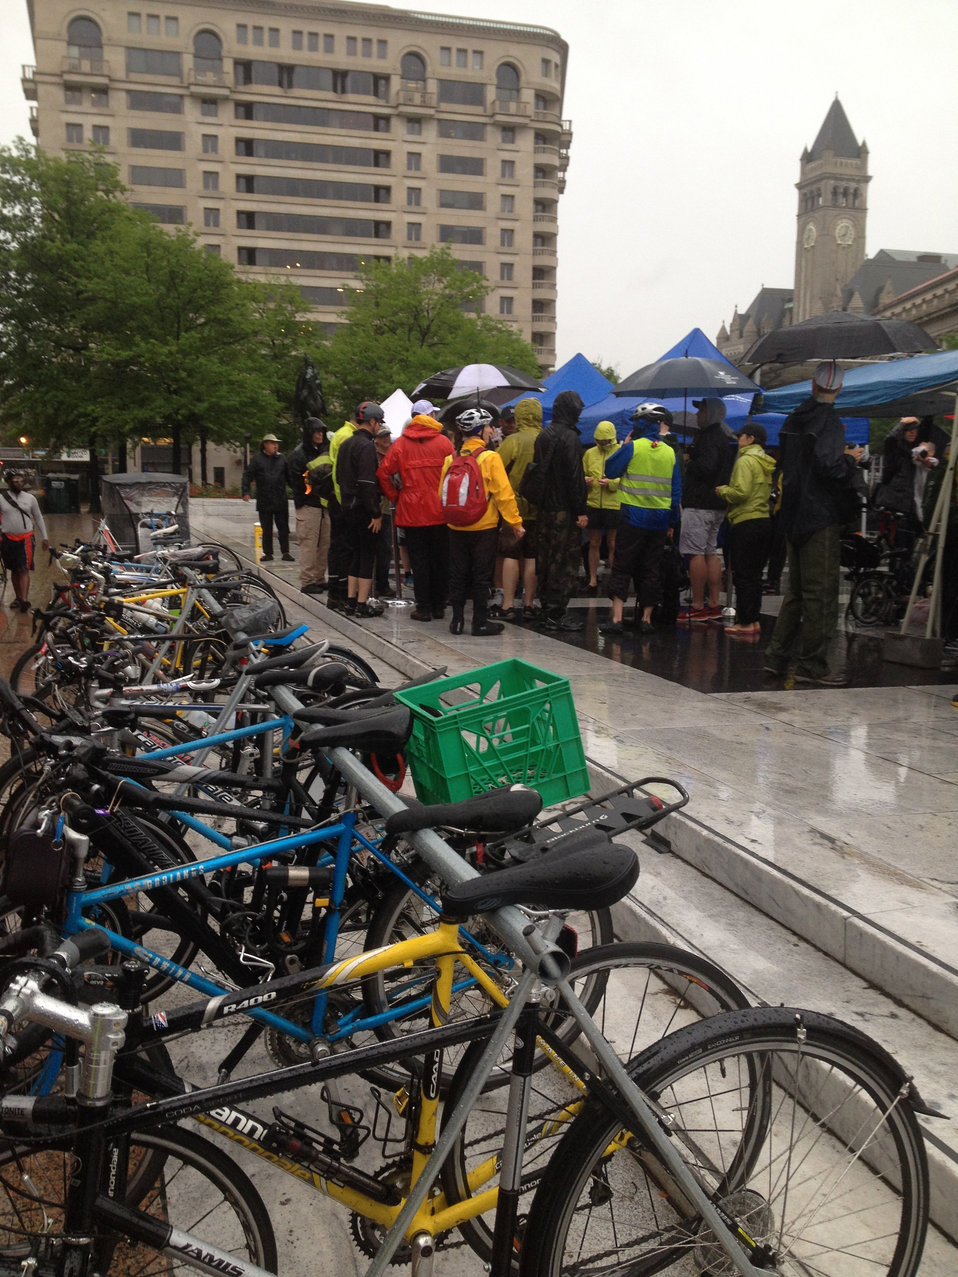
Bike To Work Day 2014

Employees at our offices across the country participated in #BikeToWork Day (even in rainy Washington, DC!). Did you?